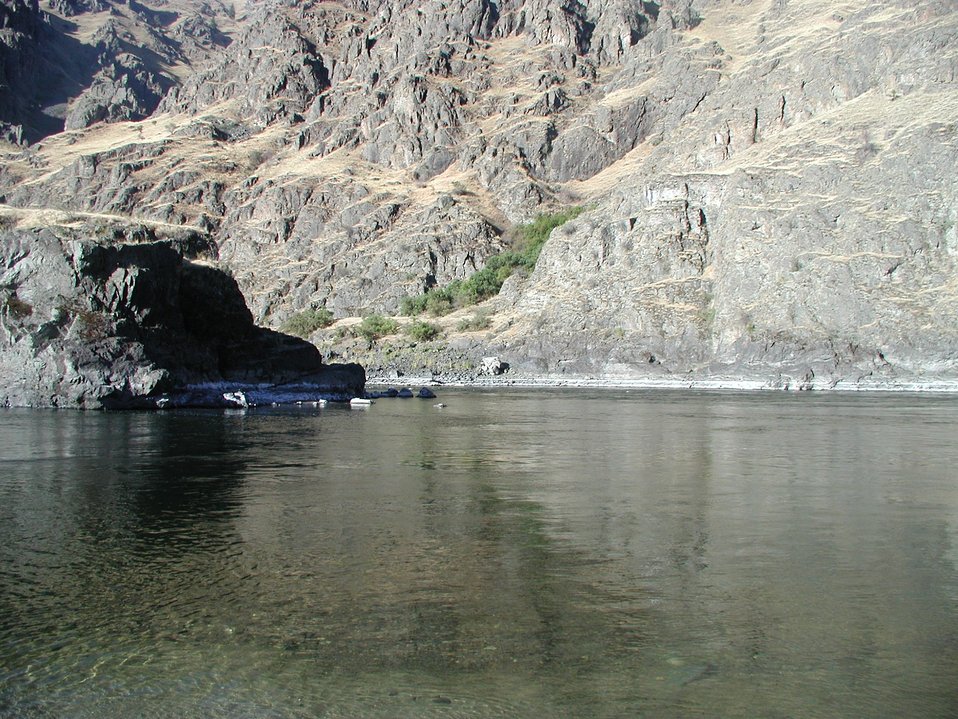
Scenic shot of Lower Salmon River Cottonwood Field Office UCSC Upper Columbia Salmon Clearwater District